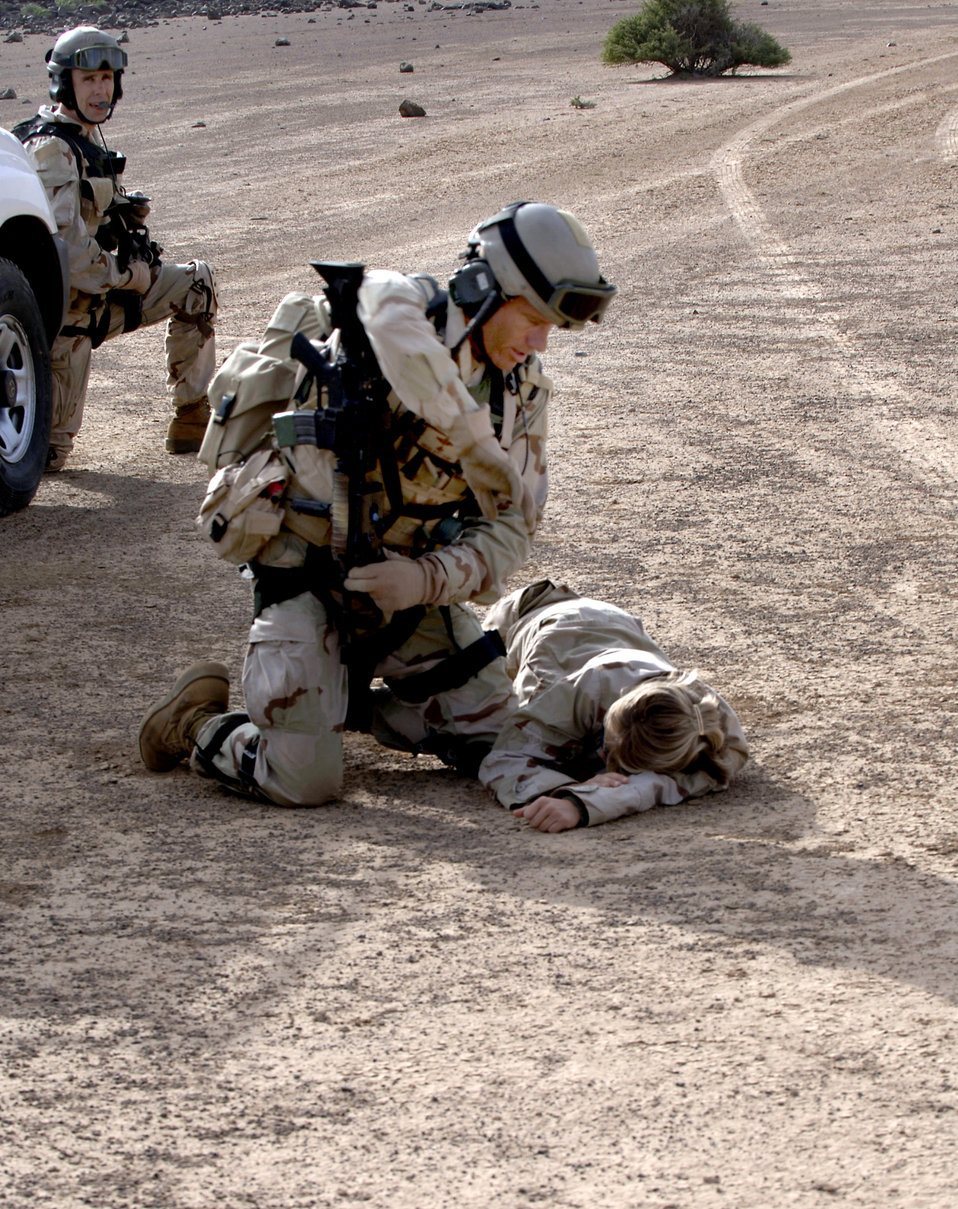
Search and rescue

CAMP LEMONIER, DJIBOUTI, Africa (AFPN) -- Capt. Jessica Maverick lies on the ground simulating a car crash injury, while Air Force pararescuemen prepare to transport her in a Marine CH-53 Super Stallion helicopter. The scenario was part of a search and rescue exercise here Feb 8.